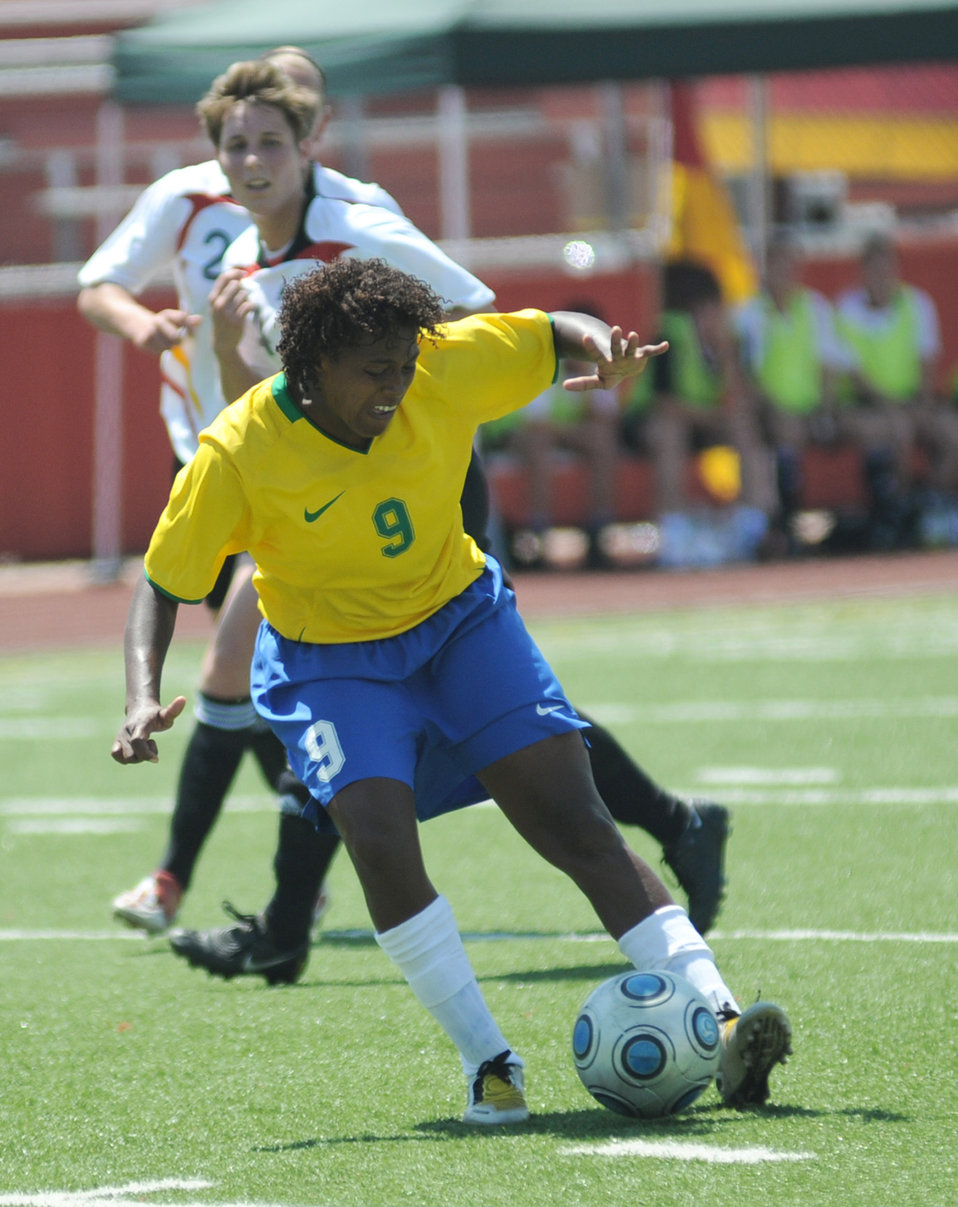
Keesler officials host Women's Soccer Championship

Soccer players from Germany and Brazil compete during the 5th Counseil Du International Sports Militaire Women's Soccer Championship at Biloxi High School Stadium June 7 in Mississippi. The CISM tournament, hosted by officials from Keesler Air Force Base, Miss., includes teams from Brazil, Canada, France, Germany, The Netherlands, South Korea and the United States.